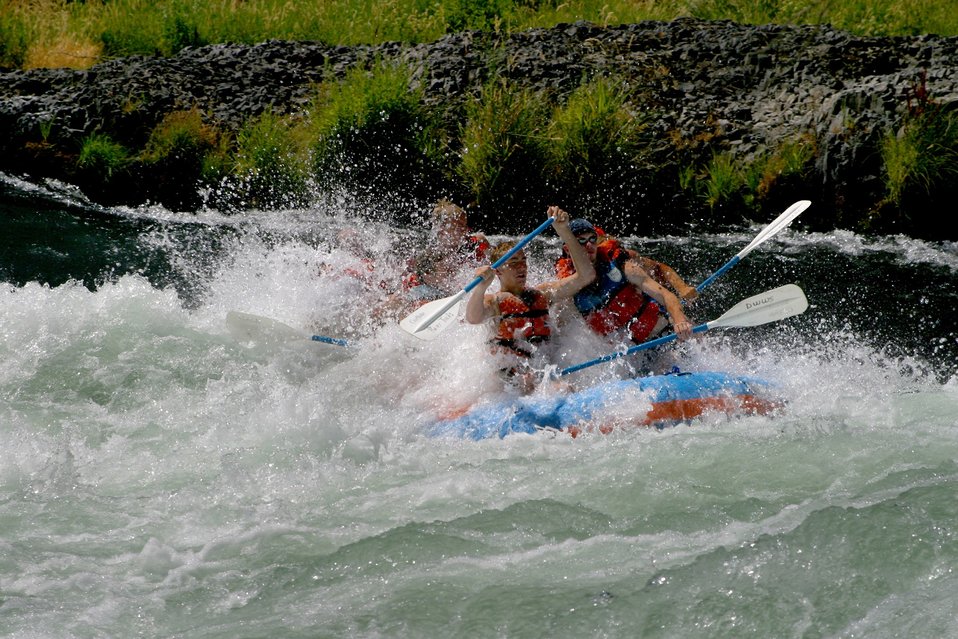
Oak Springs is a Class IV Rapids. The left channel has shallow rocks, large standing waves, turbulent currents and a large hole during high flows. The right channel has a large hole, shallow rocks, and turbulent currents. 7/26/03 Pelton Dam 3600 cfs: Moody Rapids 4300 cfs.